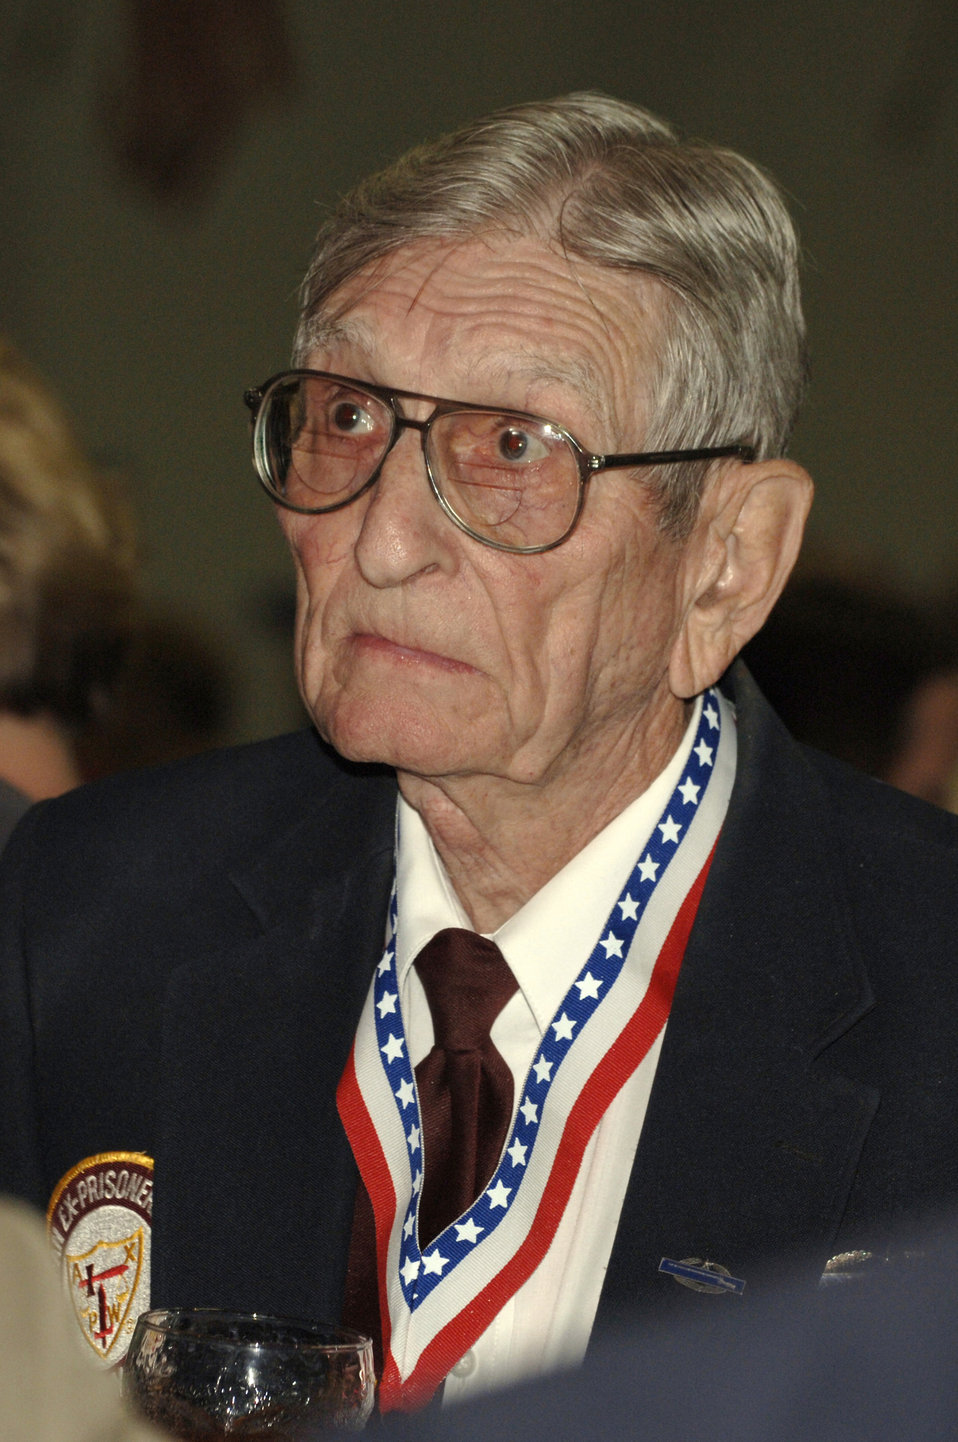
In their honor

Army veteran William House, who was a prisoner of war in World War II and the Korean War, attends the 2006 Former POW/Purple Heart Luncheon at Barksdale Air Force Base, La., on Saturday, May 20, 2006. Lt. Gen. Kevin P. Chilton, 8th Air Force commander, was the keynote speaker.